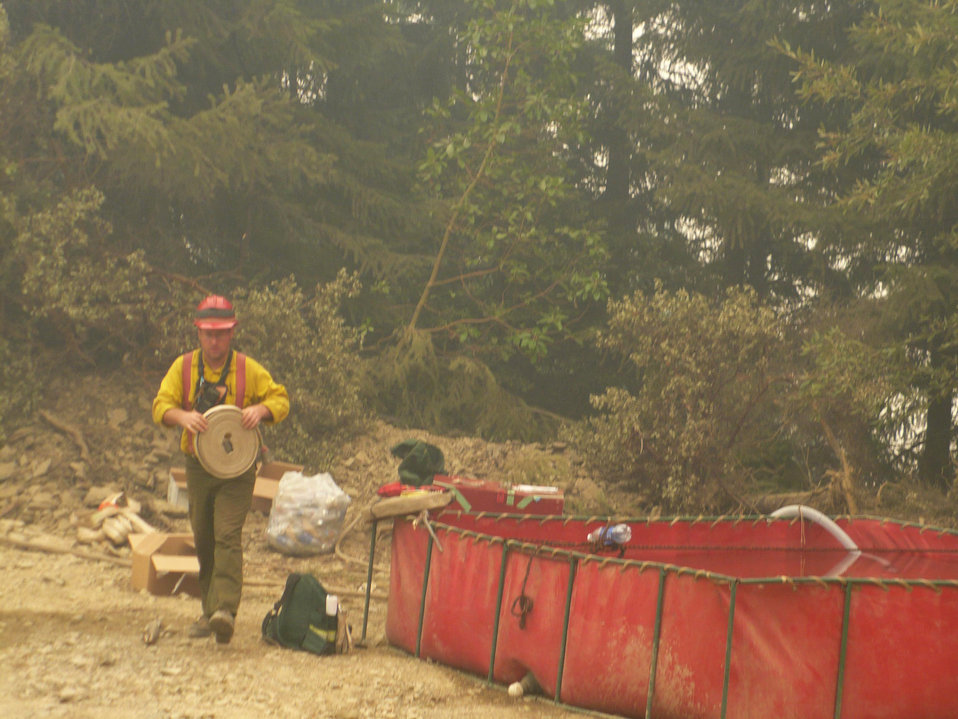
Firefighter sets up a portable water tank used to fight the Brimstone Fire in Oregon. The Brimstone Fire near Merton, OR began on Jul. 26, 2013 began by lightning consumed 2,372 acres and is 100% contained.